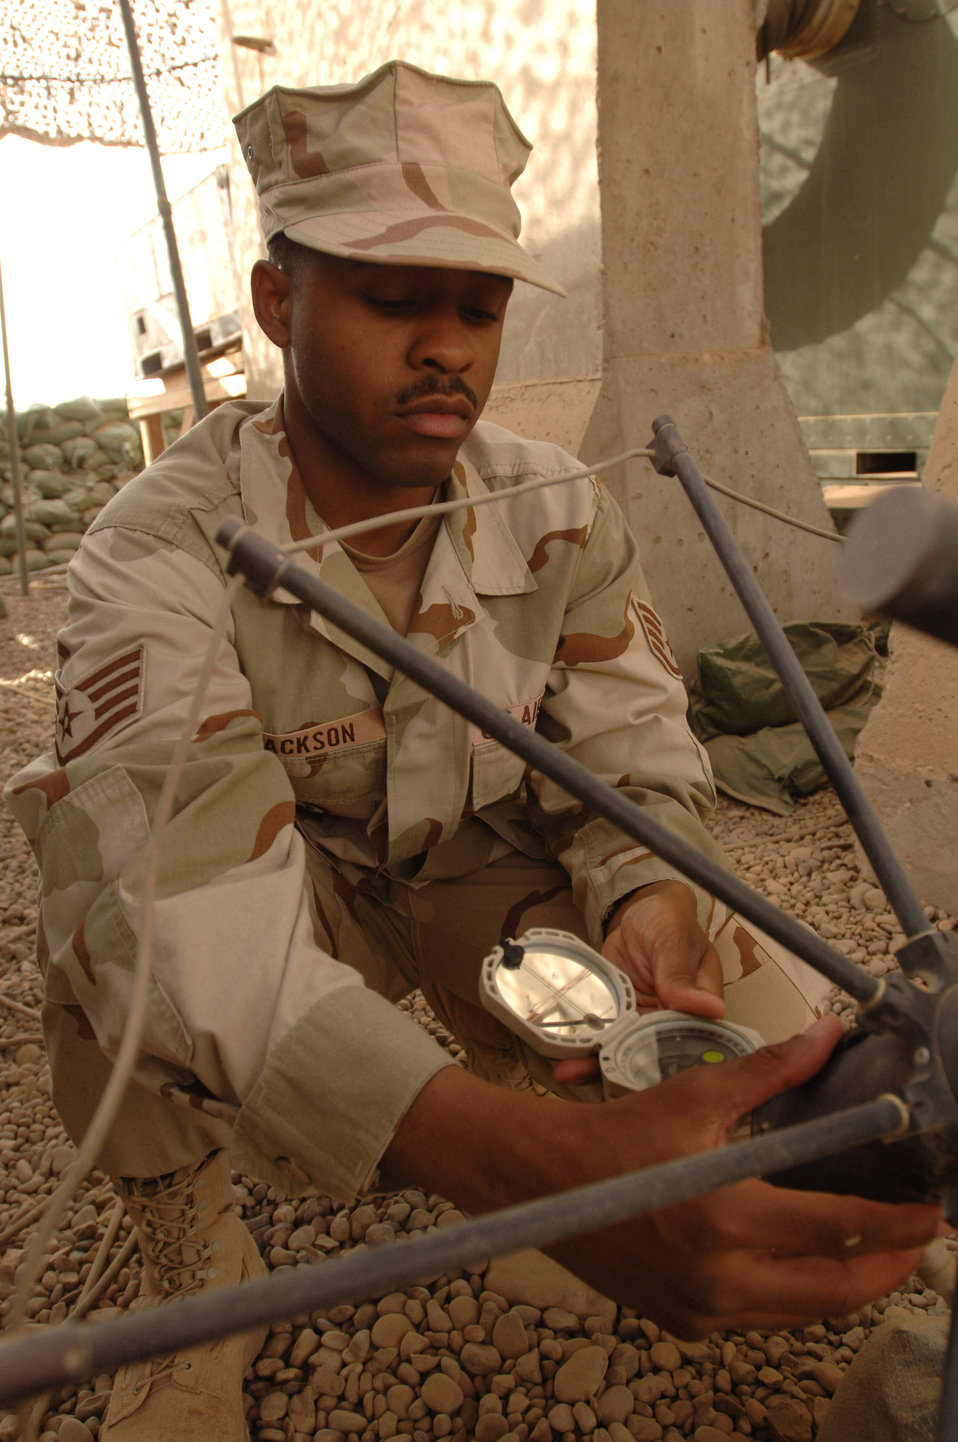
Keeping control

BALAD AIR BASE, Iraq -- Staff Sgt. Antoine Jackson positions a satellite antenna here. The 727th Expeditionary Air Control Squadron is one of five tactical command and control agencies in the Air Force. It is made up of maintainers, aircraft controllers and operators who perform radar surveillance. Sergeant Jackson is deployed from Mountain Home Air Force Base, Idaho.